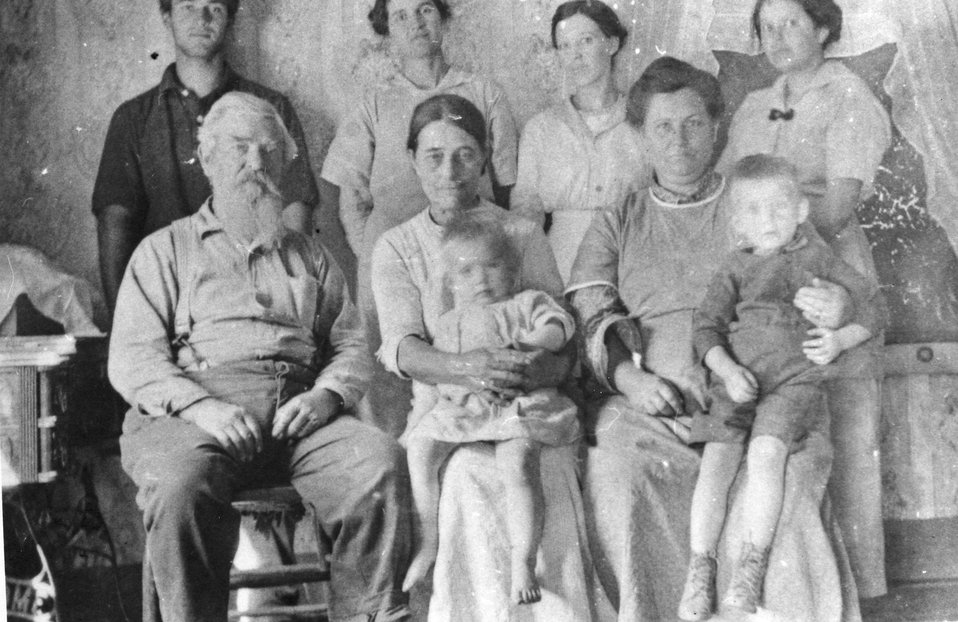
Elijah Huitt Price family.